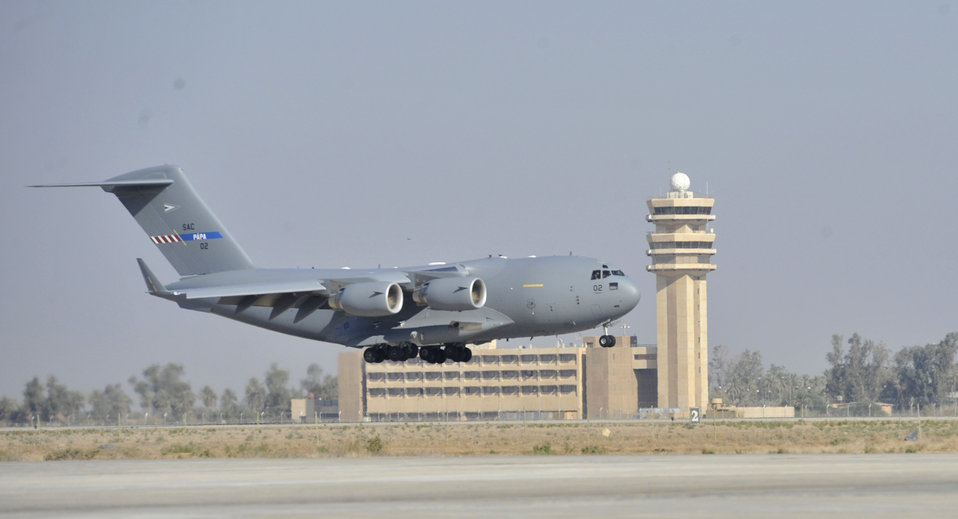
Multinational wing completes first mission into Iraq

A C-17 Globemaster III from the multinational Heavy Airlift Wing based at Papa Air Base, Hungary, makes the new unit's first landing at Baghdad International Airport, Iraq. The airlift into Iraq was a first by the wing and facilitated the deployment for members of the NATO Training Mission-Iraq. The wing operates three C-17s and includes NATO member nations Bulgaria, Estonia, Hungary, Lithuania, the Netherlands, Norway, Poland, Romania, Slovenia and the U.S., as well as Partnership for Peace nations Finland and Sweden.